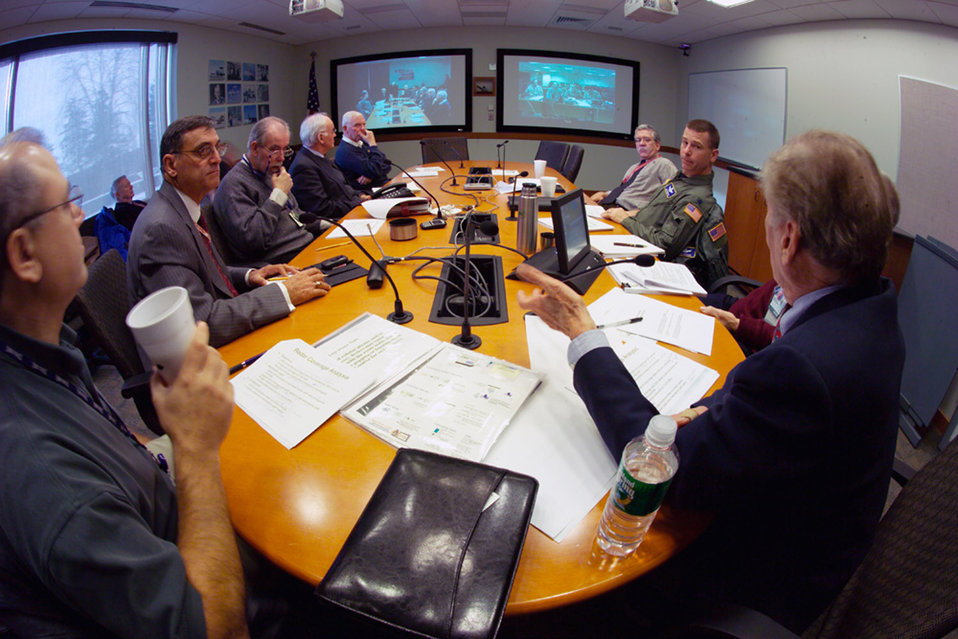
AF plan could enable Iraq air sovereignty, independence

Members of the Iraq Air Sovereignty Master Plan team from the Electronic Systems Center and MITRE Corp. present a briefing to the Iraqi air force defense group in the Baghdad Air Operations Center Dec. 5 from MITRE's Bedford campus in Massachusetts.